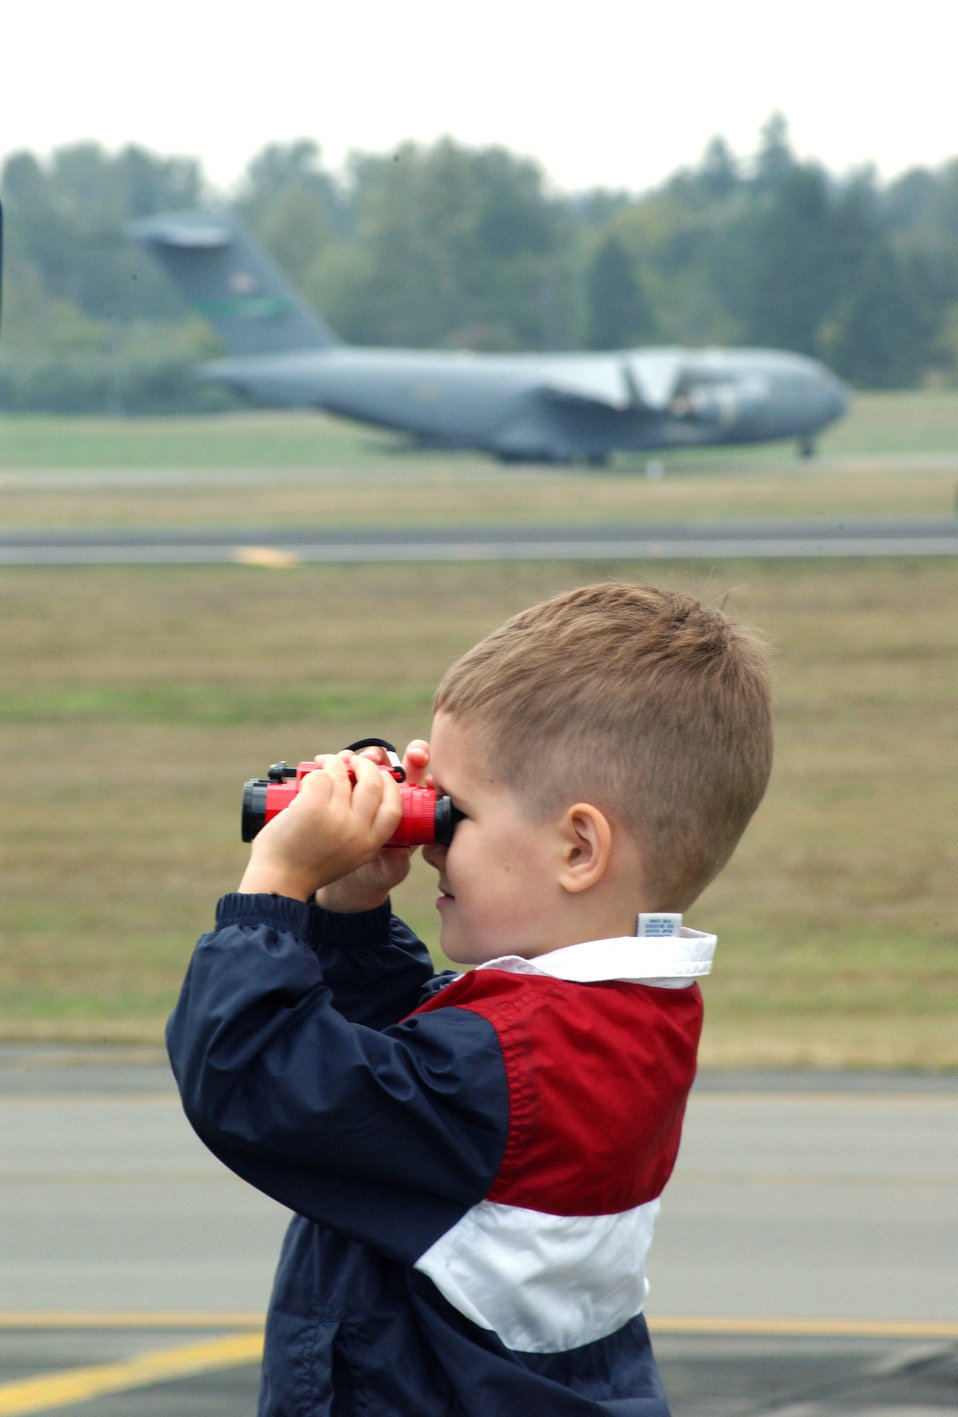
They're home

MCCHORD AIR FORCE BASE, Wash. -- Hunter Jones watches the C-17 Globemaster IIIs land here recently. Many families came out to greet nearly 1,100 Airmen returning from a deployment.